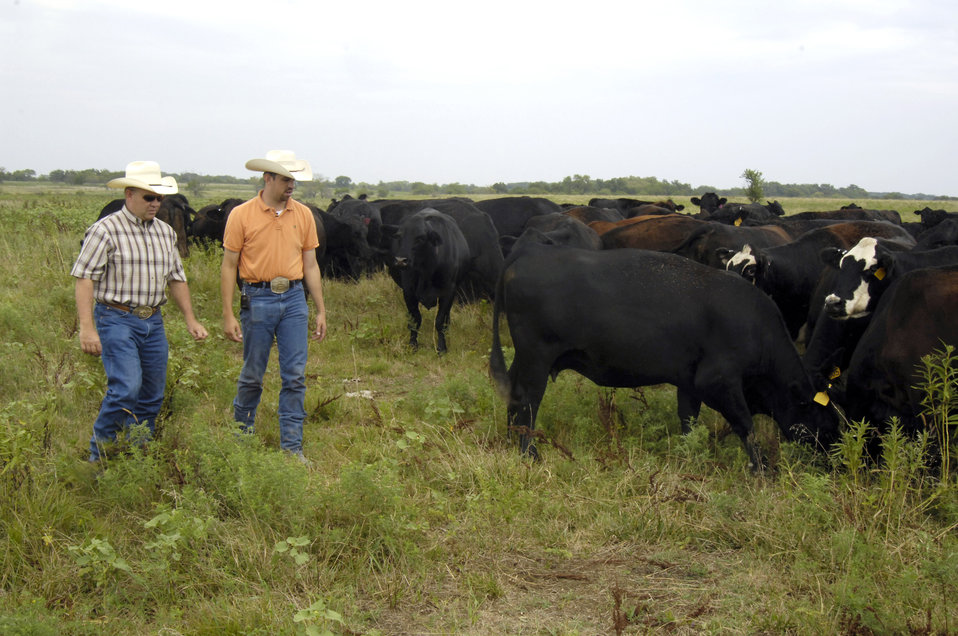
U.S. Department of Agriculture (USDA) Farm Service Agency (FSA) Farm Loan Manager Larry Huntington (left) and rancher Justin Maxey (right) survey his cattle in Nowata, Oklahoma on August 15, 2009. Maxey purchased the cattle through a USDA, FSA Beginning Farmer and a Rancher Loan and an Ownership Loan. Maxey was able to double his herd with a second loan from funding available through the American Recovery and Reinvestment Act of 2009 (ARRA).